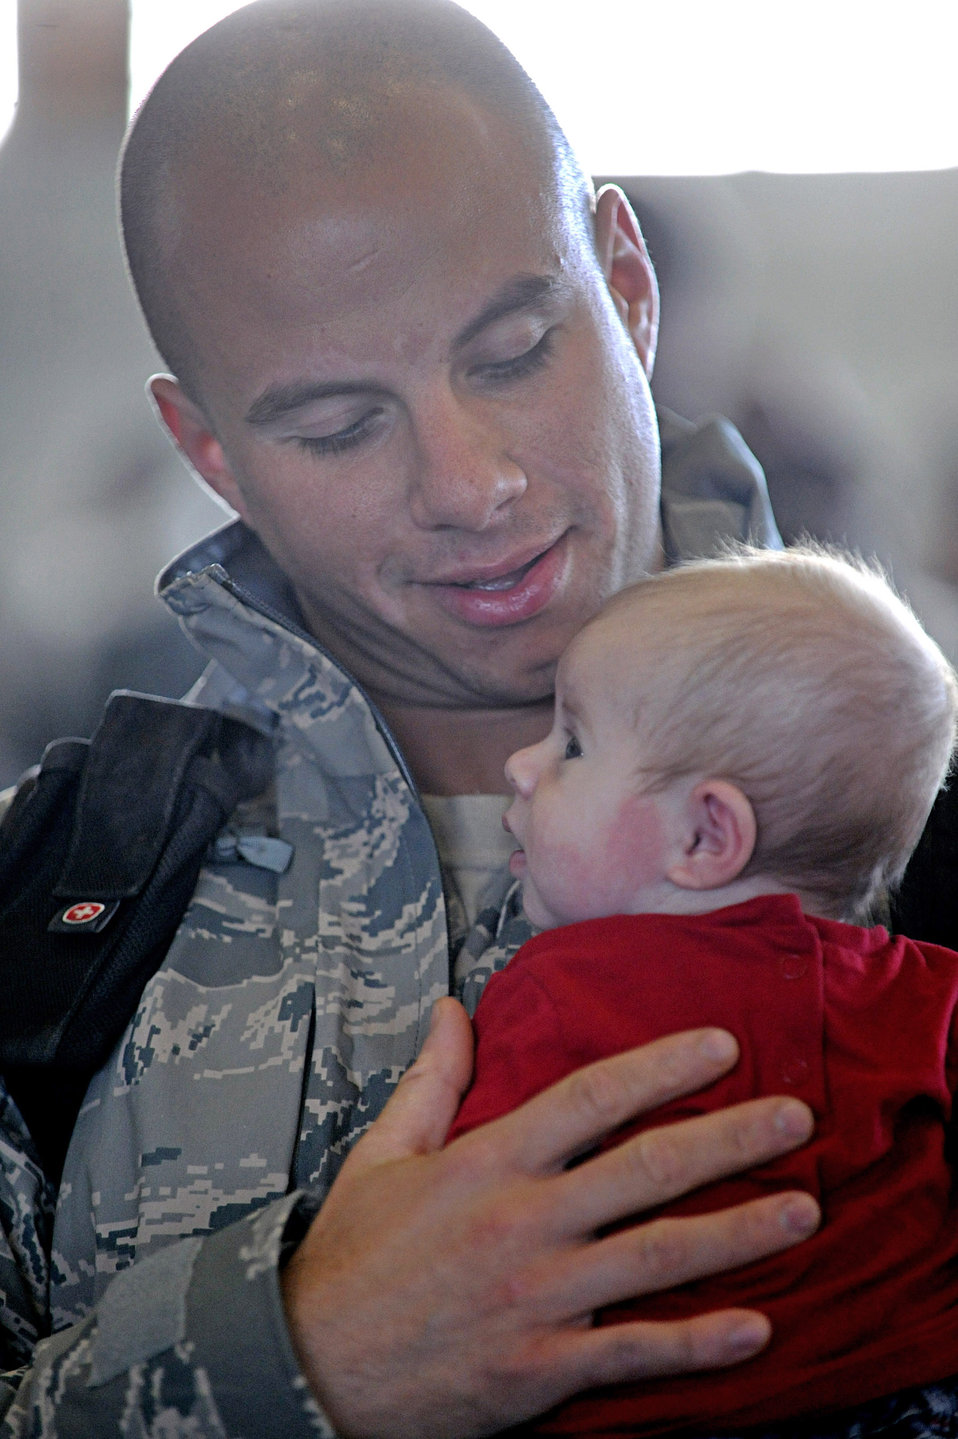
Ellsworth Airmen return home

Airman 1st Class Jordan Linial holds his baby for the first time Jan. 27, 2010, at Ellsworth Air Force Base, S.D. Airman Linial met his daughter after returning from his six-month deployment to Southwest Asia. Airman Linial is a 28th Aircraft Maintenance Squadron aircraft armament systems technician.